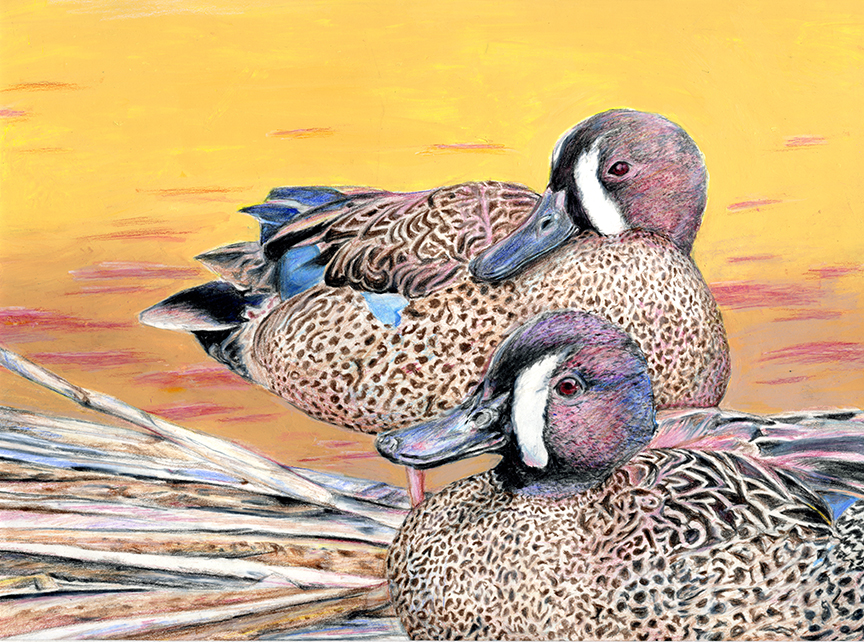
JRDuck2013CO

2013 Junior Duck Stamp Best of Show-Colorado